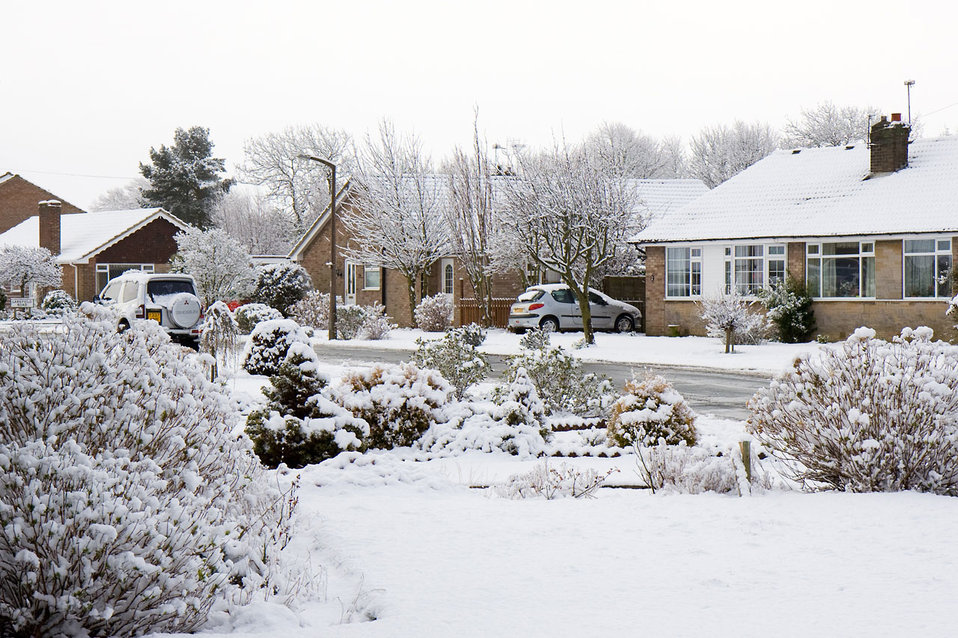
Winter scenery.